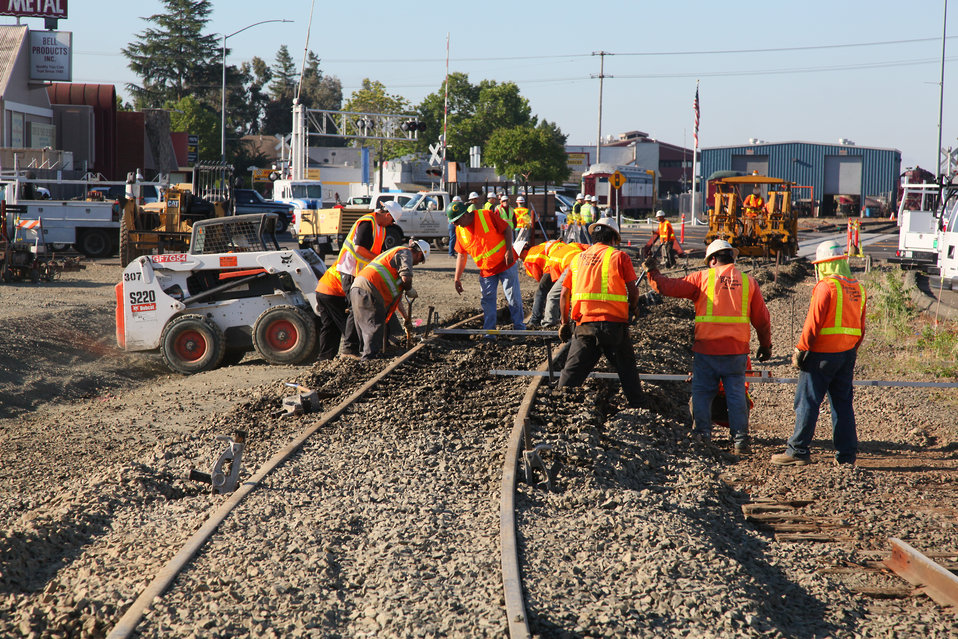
New railroad bridges open in Napa

Workers complete final grading of the approach to a new railroad bridge in Napa, Calif., before its official opening in a ceremony June 22, 2011. The U.S. Army Corps of Engineers Sacramento District built the bridge to replace a lower adjacent railroad bridge that blocked the Napa River in high water, often causing flooding in downtown Napa. The project is part of the larger Napa River-Creek Flood Protection Project, a joint effort of the Corps, the city of Napa, and the Napa Flood Control and Water Conservation District to reduce flood risk for the city.